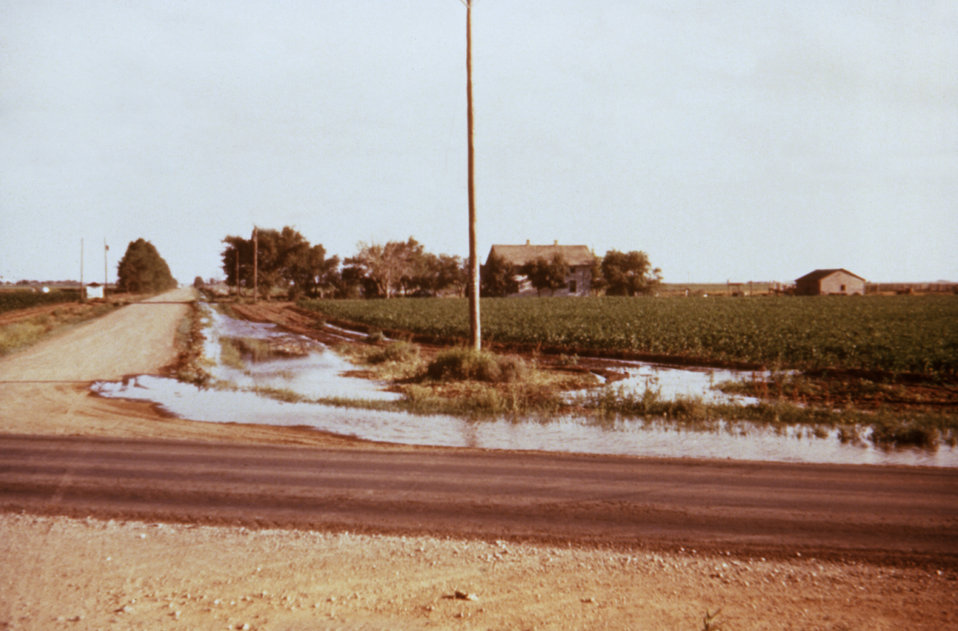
This photograph shows how irrigation run-off water from a cotton field has collected in a roadside ditch in Texas.